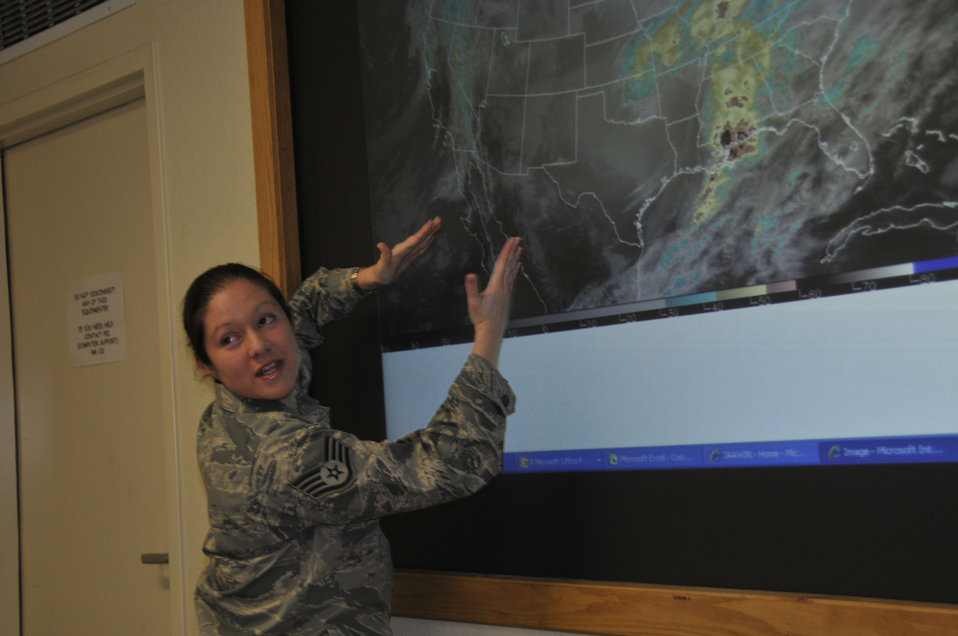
Red Flag WX specialists do more than predict the weather

Staff Sgt. CeCe Ybarra, a Red Flag weather forecaster deployed from the 48th Operations Support Squadron at Royal Air Force Lakenheath, England, briefs Red Flag aircrews prior to a mission. Sergeant Ybarra provides weather support for more than 1,200 servicemembers from the U.S. and United Kingdom participating in the exercise.